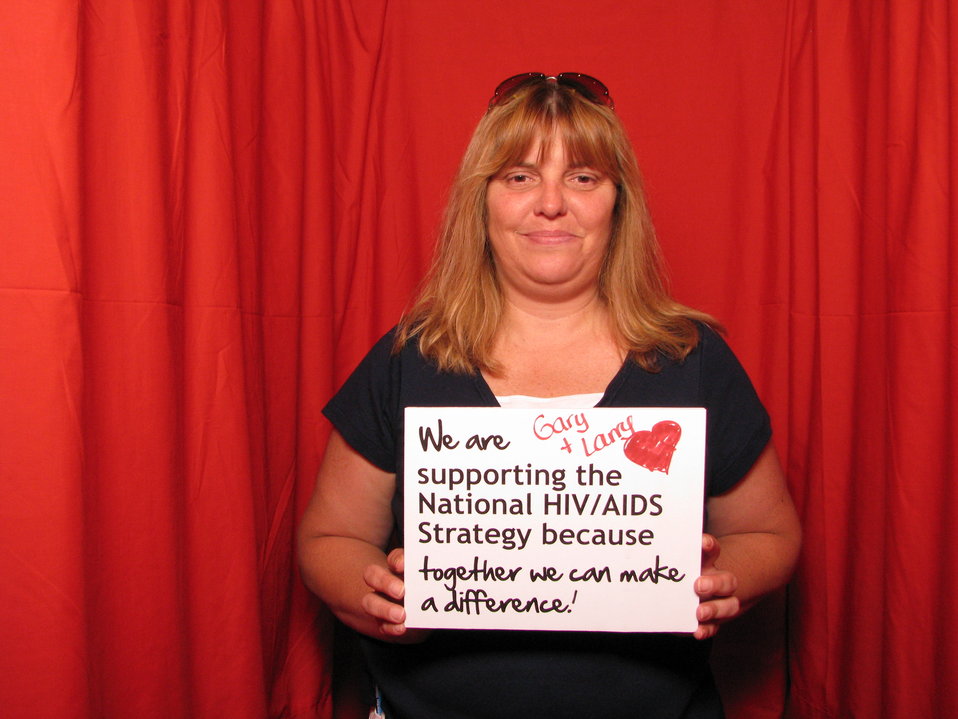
We are supporting the National HIV/AIDS Strategy because together we can make a difference. Gary Larry

From the AIDS.gov photo booth at the U.S. Conference on AIDS, September 2010 (Orlando, FL).